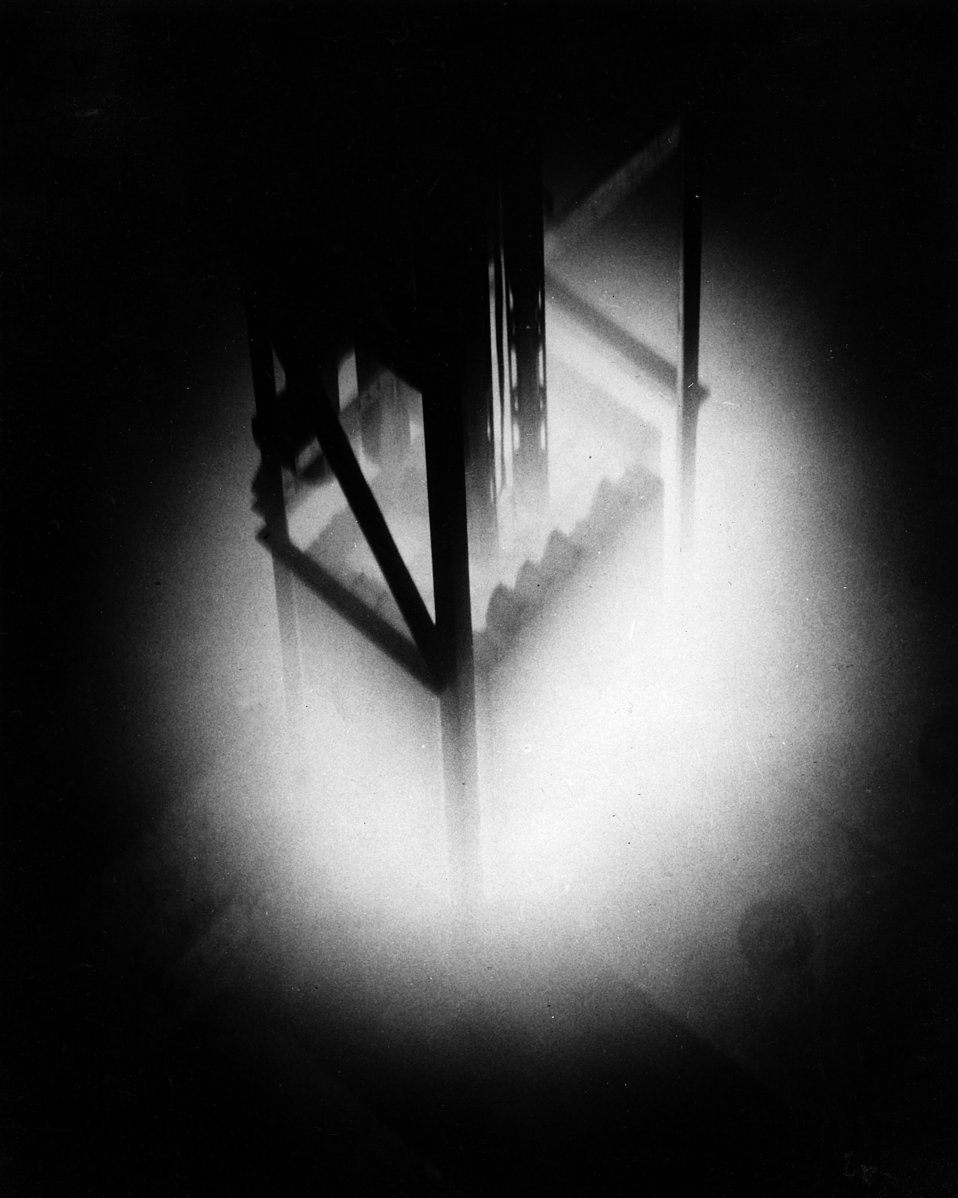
View of the Swimming Pool Reactor emanating bluish glow as it operates in pool of water in which reactor is immersed. c. 1954